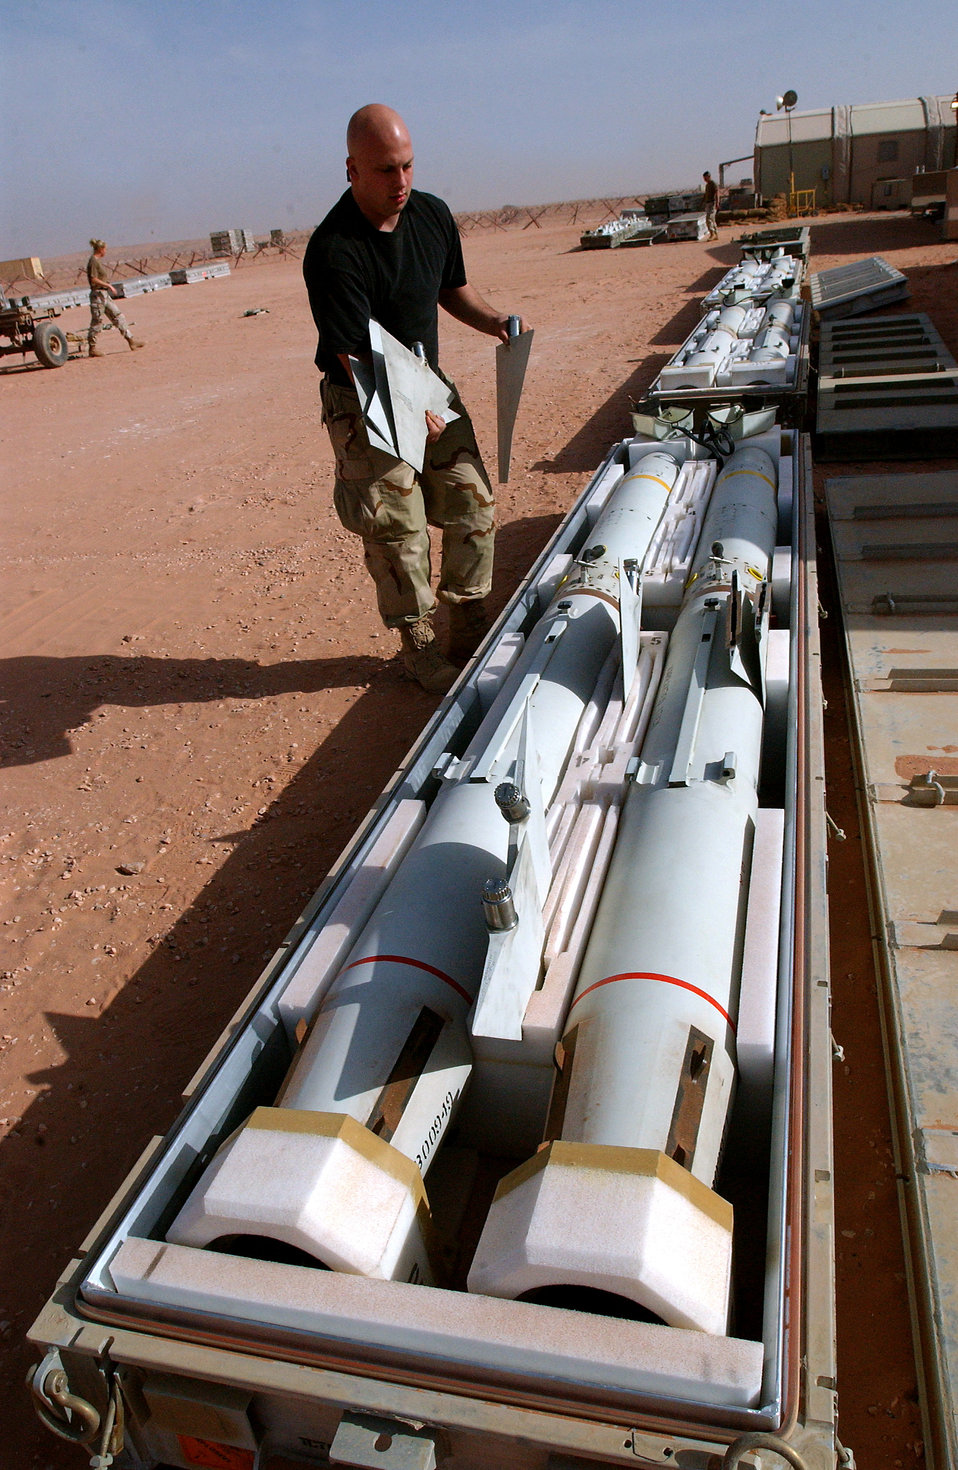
York

OPERATION IRAQI FREEDOM -- Senior Airman Christopher York, deployed from 18th Fighter Squadron, Kadena Air Base, Japan to the 363rd Expeditionary Equipment Maintenance Squadron, puts Air to Ground-88 missile wings and fins into the universal wing and fin container for download to an F-16CJ aircraft on a flight line in preparation for a mission on March 25. 363rd EEMXS members work 12-hour days 7 days a week preparing precision guided missiles to support Operation Iraqi Freedom at a forward deployed location in Southwest Asia. Operation Iraqi Freedom is the multi-national coalition effort to liberate the Iraqi people, eliminate Iraq's weapons of mass destruction and the regime of Saddam Hussein.